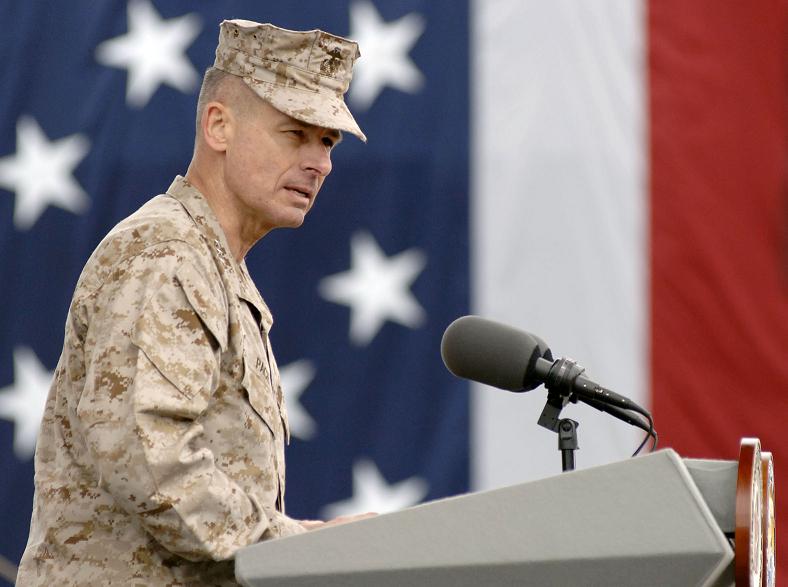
Center for Intrepid

Chairman of the Joint Chiefs of Staff Gen. Peter M. Pace talks to a crowd of injured service members at the unveiling of the new Center for the Intrepid rehabilitation center adjacent to Brooke Army Medical Center in San Antonio, Texas. More than 3,200 people attended the ceremony.